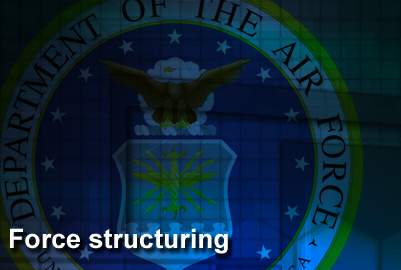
Air Force officials announce fiscal 2010 force structure realignments

Air Force officials here announced June 26 its proposed force structure realignment for fiscal 2010 to address the Air Force's force structure, realignment and management actions supported by the president's fiscal 2010 budget and summarizes the civilian and military personnel changes as well as the reassignment of aircraft at bases for the upcoming fiscal year.